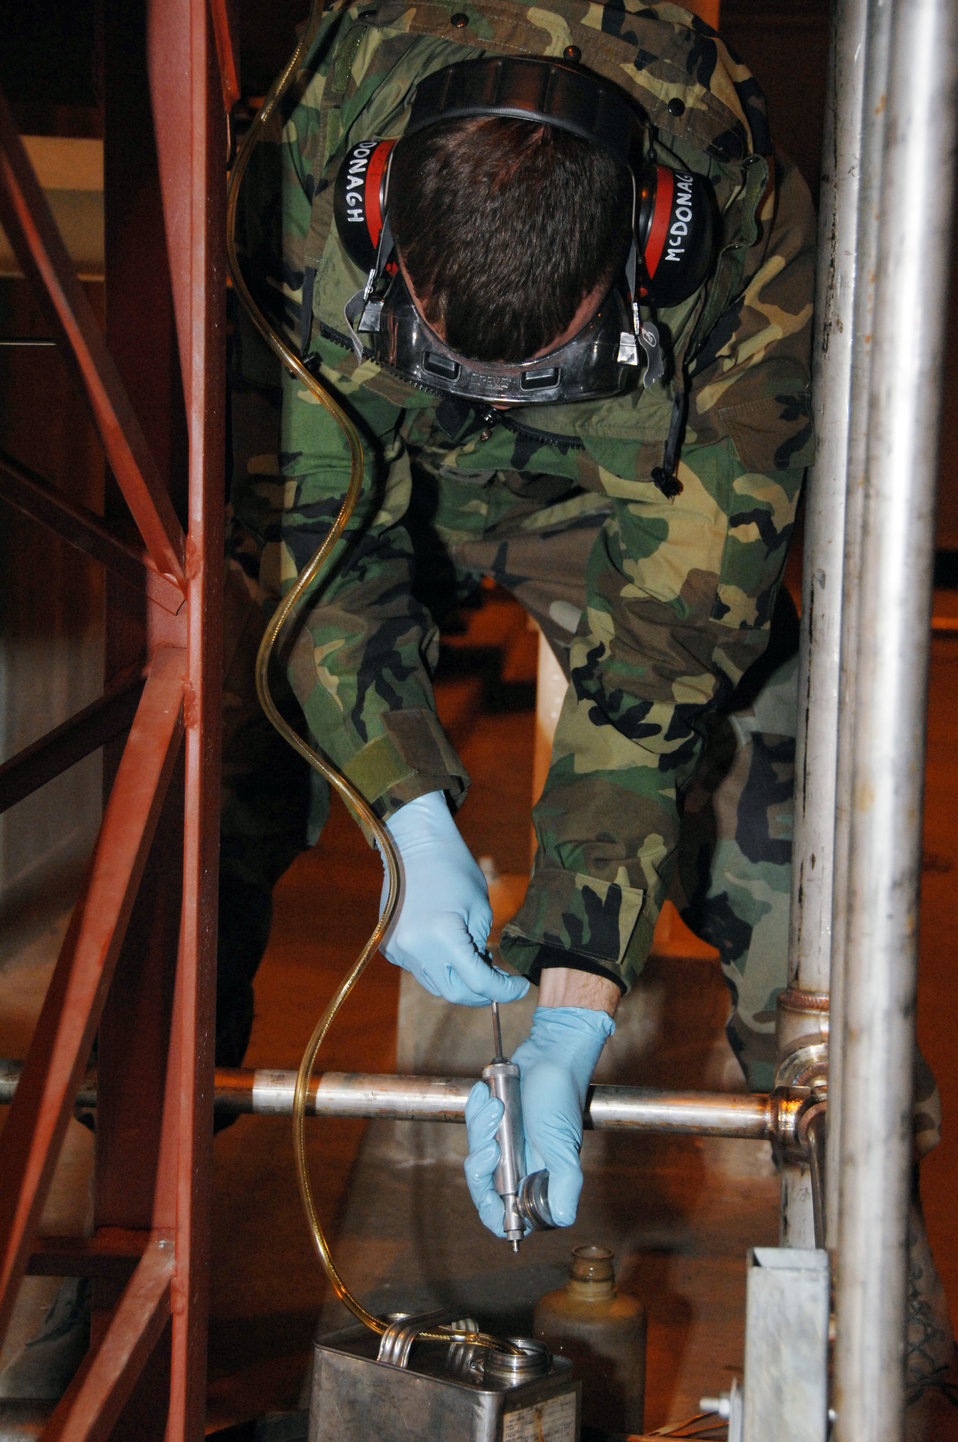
'Fuel Doctor' on duty

Airman 1st Class Sean McDonagh uses a syringe to separate fuel into containers Oct. 24 at the Oscar Pump House located near the flightline at Eielson Air Force Base, Alaska. Making sure the fuel used by the aircraft at Eielson is always good to go, Airman McDonagh helps assure the process by constantly sampling the fuel lines and the trucks that distribute it to the aircraft. Airman McDonagh is a fuels laboratory technician assigned to the 354th Logistic Readiness Squadron.